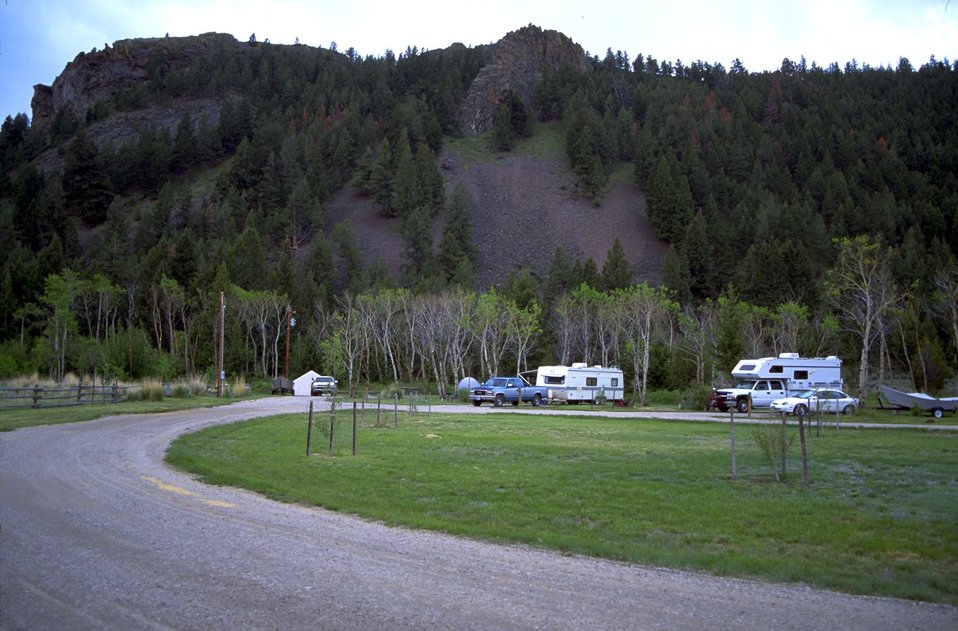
Campers at Divide Campground